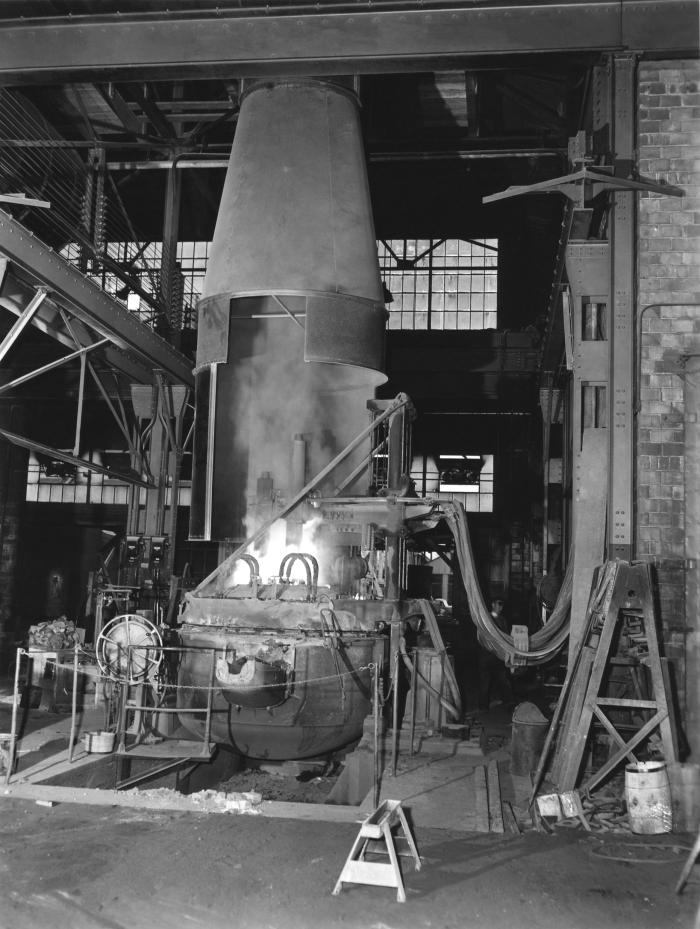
This historical 1947 photograph was provided by the Center for Disease Control's (CDC), National Institute for Occupational Safety and Health (NIOSH). It depicted an indoor electric steel furnace, at the Pacific Car & Foundry Co., Renton, Washington that was equipped with an overhead ventilation hood, which here was lifted, in order to allow for the passage of a 'crane'. Before the installation of this ventilation system, the fumes were said to be quite bothersome. Note PHIL 9617, showing the ventilation hood in the lowered position.The NIOSH Historic Photo Collection was the 'picture file' of the Industrial Hygiene Division of the U.S. Public Health Service (USPHS) (c. 1930-1960). It is both a unique mid-20th century image collection of people in workplace environments, and a documentary record of the science of studying workers and the workplace. The collection consisted of photographs, and some original drawings.